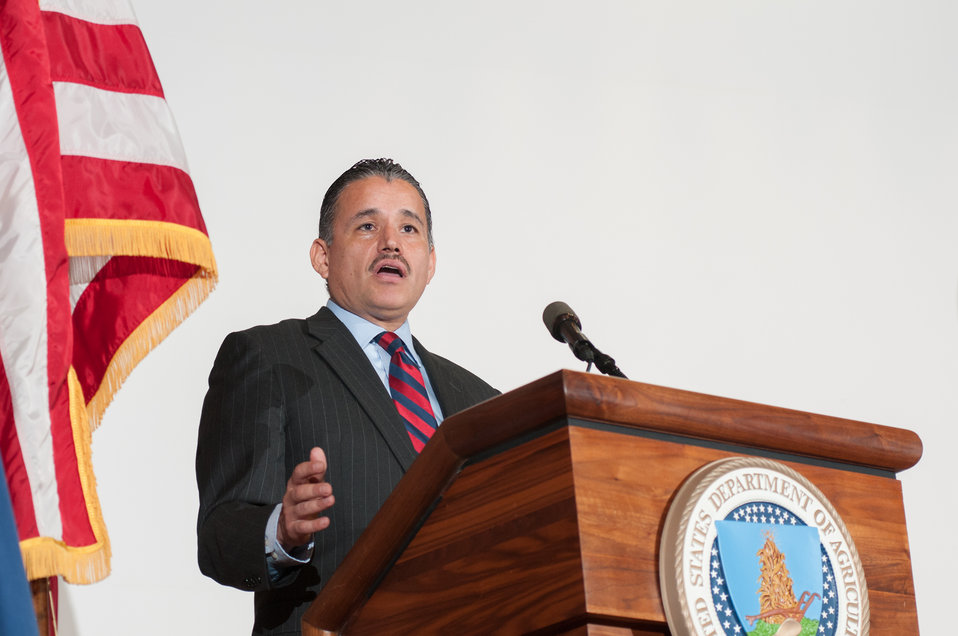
U.S. Department of Agriculture (USDA), Office of the Secretary (OSEC), Deputy Chief of Staff Oscar Gonzales speaks, during the USDA Asian Pacific American Heritage Month Observance, at the USDA headquarters in Washington, D.C., on Thursday, May 23, 2013. This year’s theme is “Building leadership; Embracing the Cultural Values and Inclusions.”